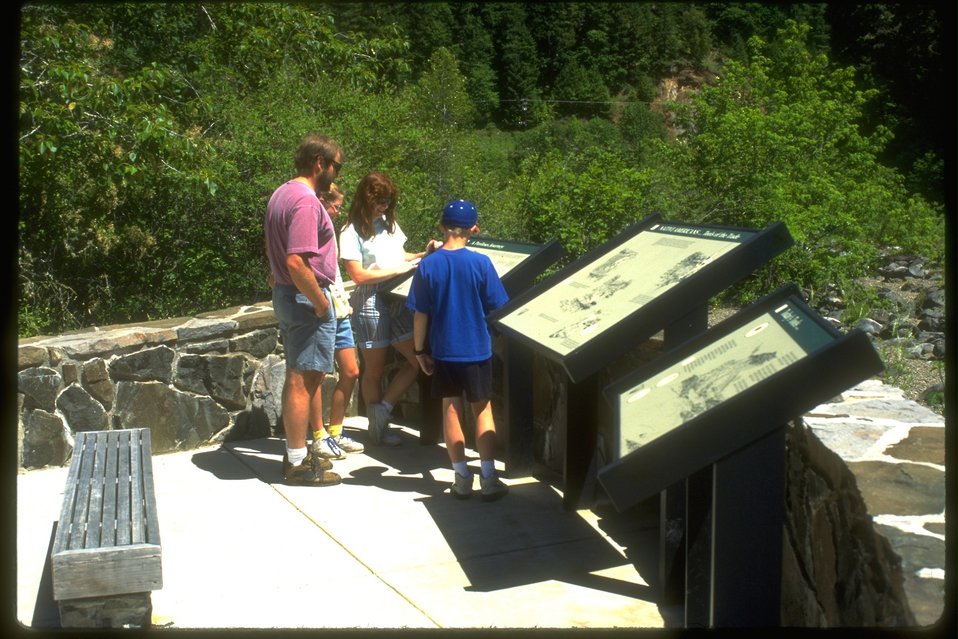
Family reads interpretive panels at the Swiftwater Recreation Site.